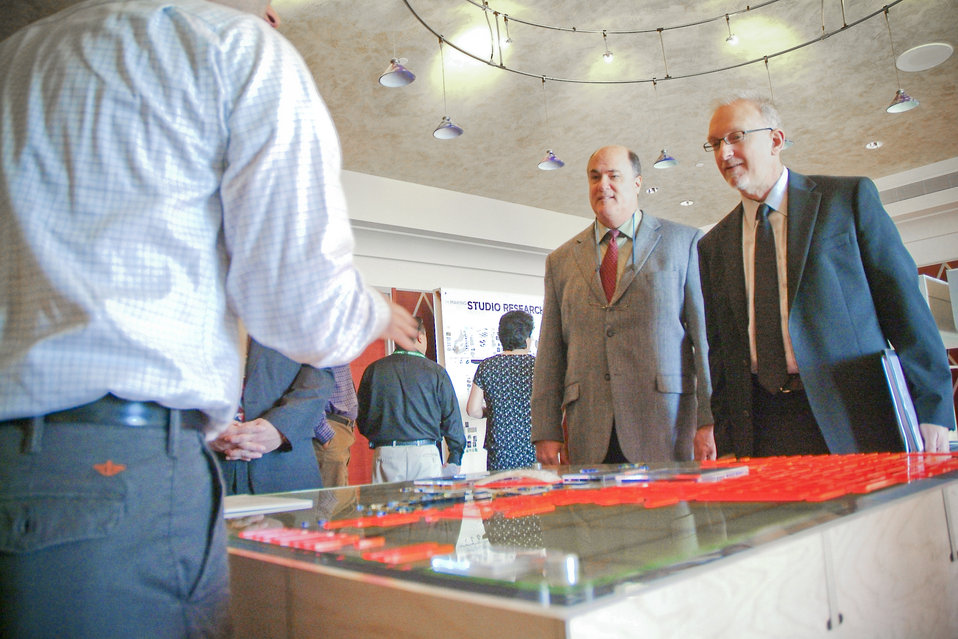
UK Students Imagine DOE’s Paducah Site As Future Technical-Industrial Hub

DOE-EM Senior Advisor Dave Huizenga, right, and Portsmouth-Paducah Project Office Manager Bill Murphie listen as UK College of Design graduate student Nate Owings, foreground, explains a Paducah Site model. The model was displayed at the Site-Specific Advisory Board Chairs Meeting in Paducah, where Huizenga spoke April 18.